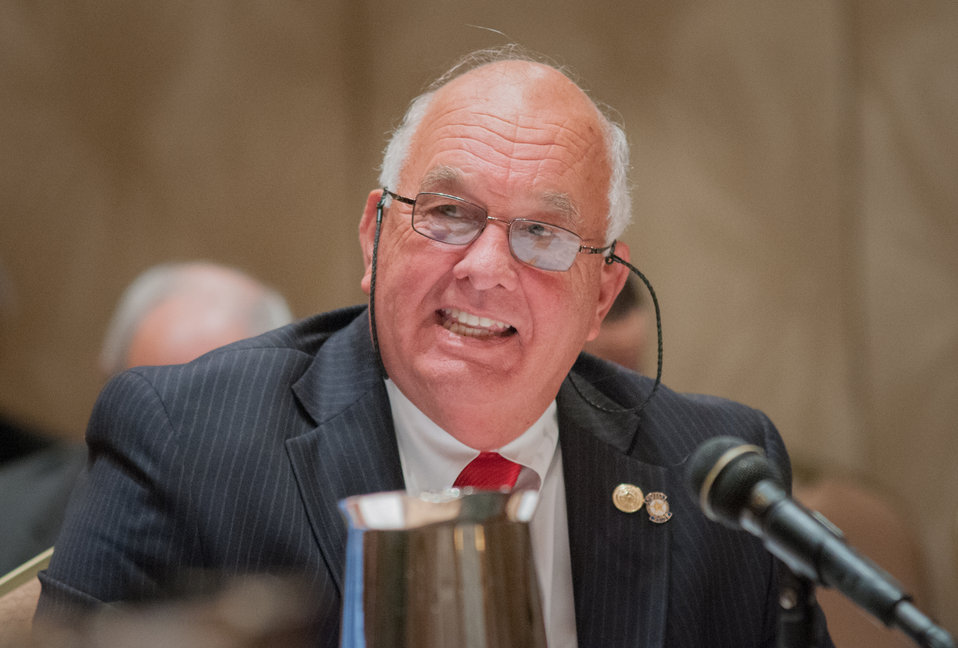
Jerry McPeak, State Legislator and Farmer/Rancher of the Muscogee Nation in Warner, OK makes a statement to Agriculture Secretary Tom Vilsack, during the U.S. Department of Agriculture's (USDA) Council for Native American Farming and Ranching (CNAFR) advisory committee meeting, on Monday, Sep. 9, 2013 at the L'Enfant Plaza Hotel, in Washington, D.C. CNAFR was created to advise the Secretary on ways to eliminate barriers to participation for Native American Farmers and Ranchers in USDA programs. The Council was established as part of the Keepseagle settlement, and is conducted under the oversight of USDA's Office of Tribal Relations, which is part of the Office of the Secretary of Agriculture. Also in attendance is The Director of Tribal Relations Leslie Wheelock, Agriculture Assistant Secretary for Civil Rights Joe Leonard, Jr. Ph.D., Farm Services Administration Administrator Juan M. Garcia and Deputy Administrator for Farm Loans Programs Chris Beyerhelm.